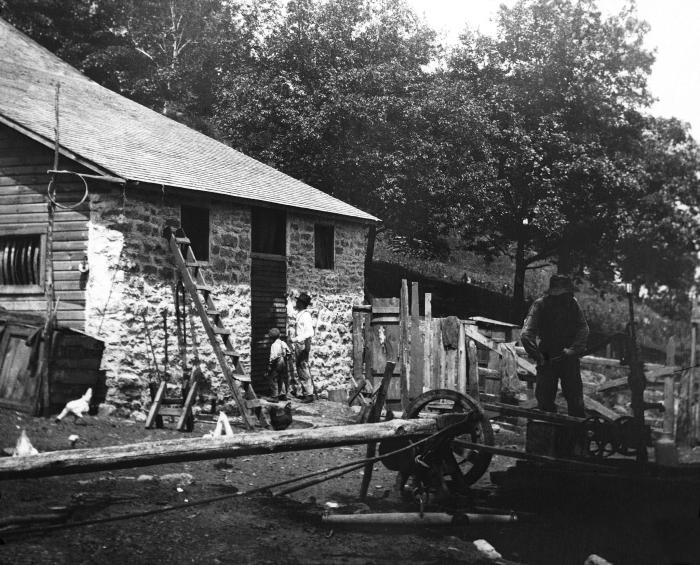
This is a 1909 photograph depicting an improperly constructed 'drilled' well on the grounds of a Minnesota farm home. It was one of a series of instructional photos used by the Minnesota Board of Health to train public health workers.